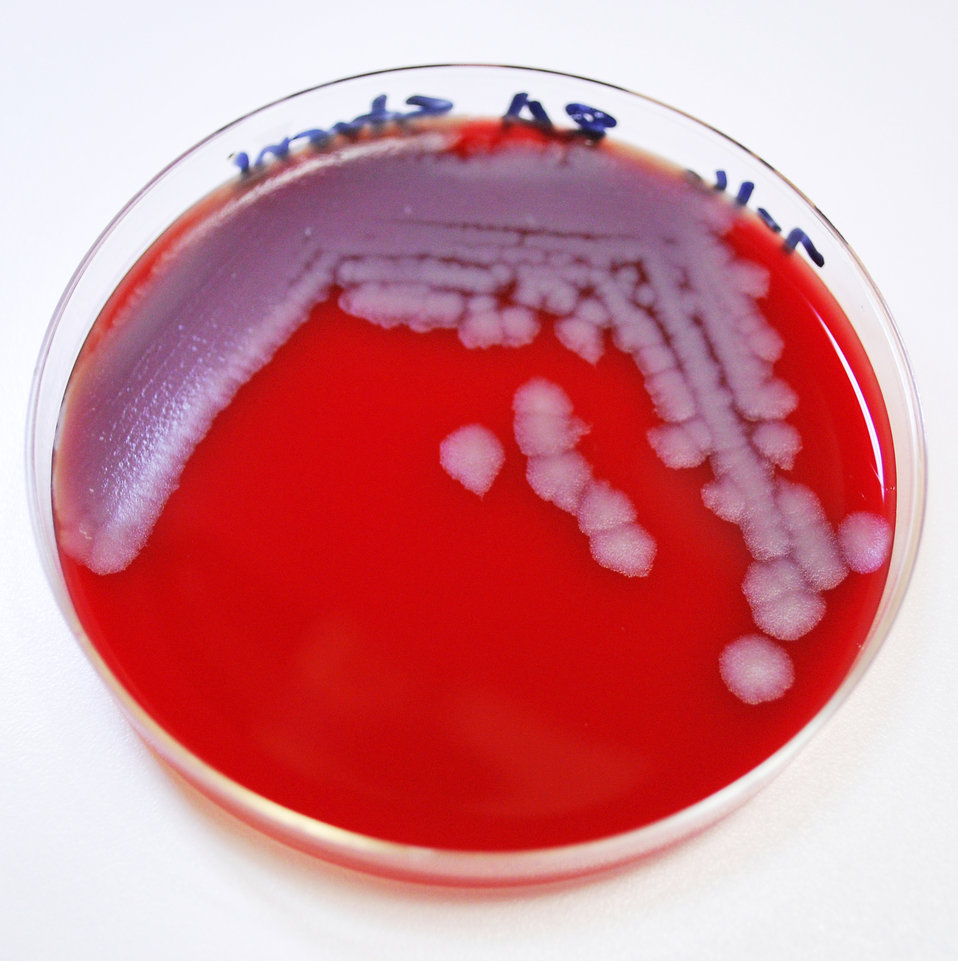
This image depicted numbers of Bacillus anthracis bacterial colonies, which had been allowed to grow on sheep's blood agar (SBA) for a 24 hour period. Note the classical appearance exhibited in the colonial morphology including a ground-glass, non-pigmented texture with accompanying 'comma' projections from some of the individual rough-edged colonies. See PHIL 11748 for a higher magnification of these colonies.What is anthrax?